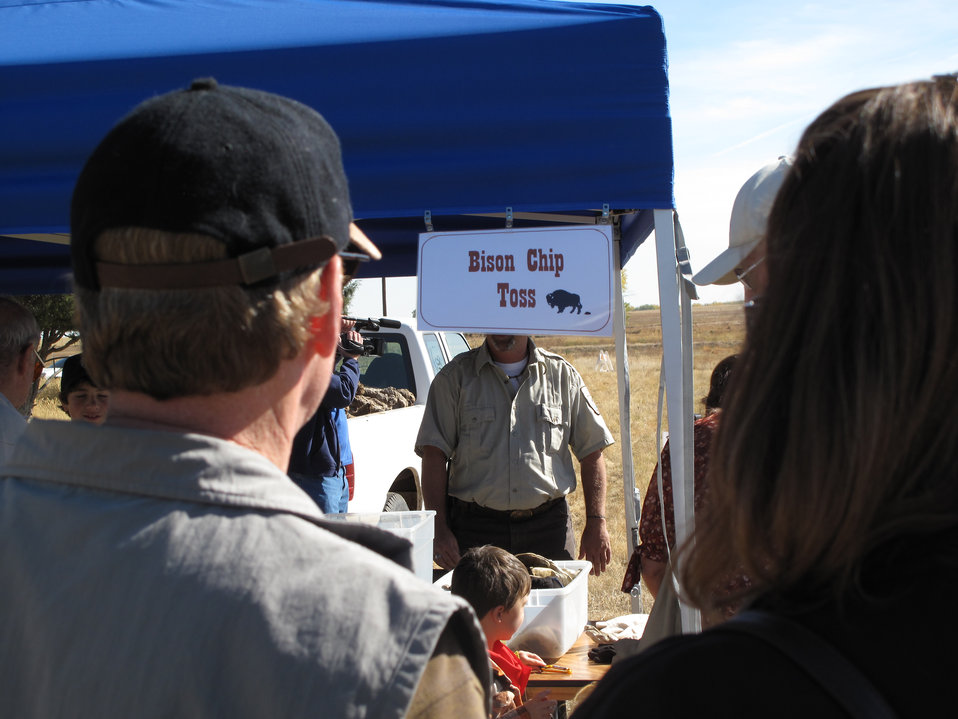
Refuge Round-up 2010

Bison chip toss booth.